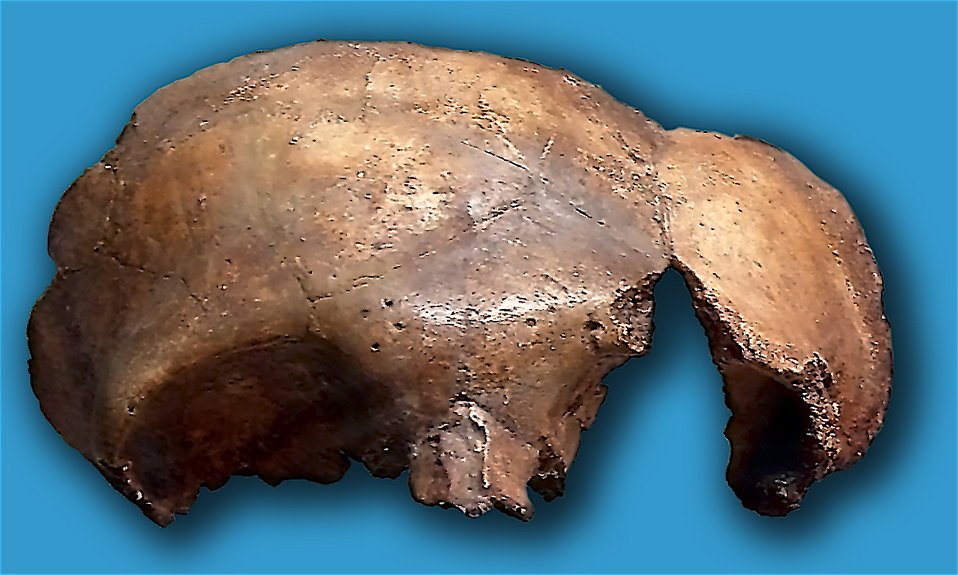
Frontal bone of a neanderthal child from the Cave of La Garigüela (Carigüela del Piñar, province of Granada, Spain); it is dated betwen 50,000-46,000 years old. This is a replica, the original it exhibit in the Museo Arqueológico Provincial of Granada) Español: Frontal infantil procedente de la Cueva de La Garigüela (Carigüela del Piñar, provincia de Granada, España), datado entre 50.000 y 46.000 años de antigüedad. La foto muestra una réplica, el original se expone en el Museo Arqueológico Provincial de Granada